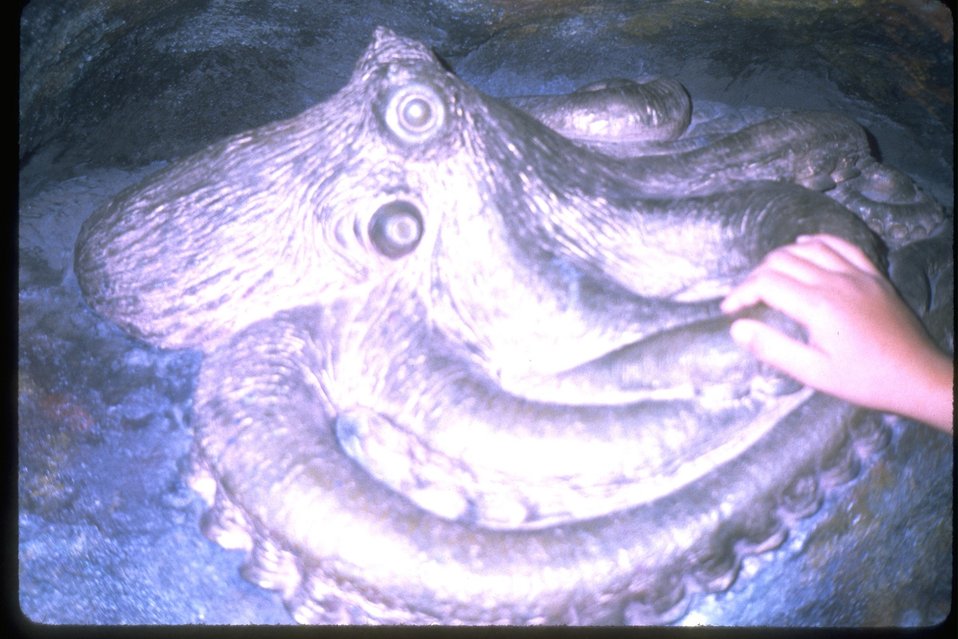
The "Cave" exhibit with an octopus at the Yaquina Head interpretive center.